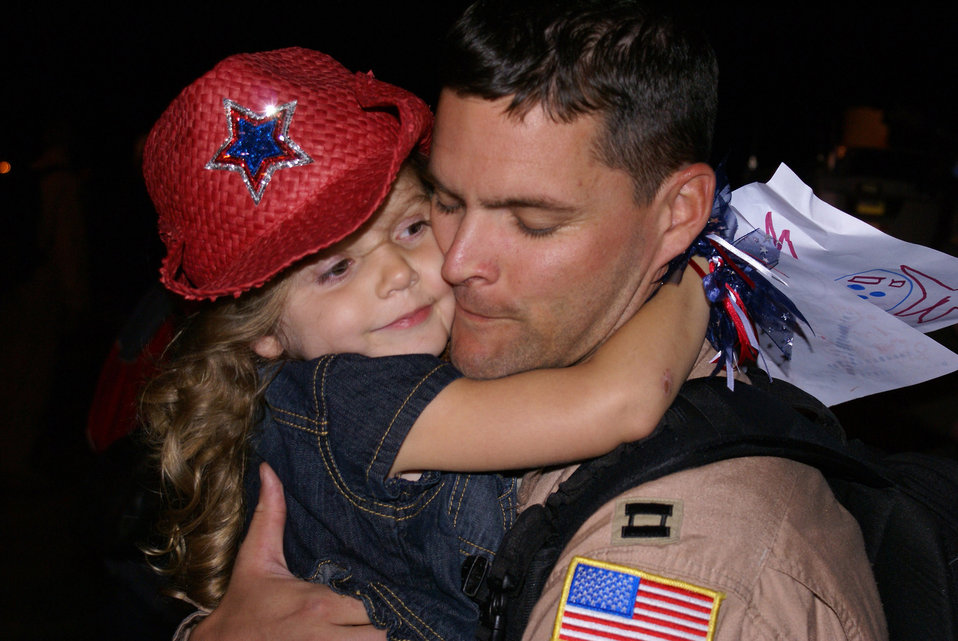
Welcome home, Daddy!

Capt. Michael Capozzi, a pilot with the 7th Airlift Squadron, gets a big hug from his daughter during the squadron's return July 7 to McChord Air Force Base, Wash. More than 150 Airmen from the squadron were greeted by family and friends here after more than four months deployed in support of operations Enduring and Iraqi Freedom.